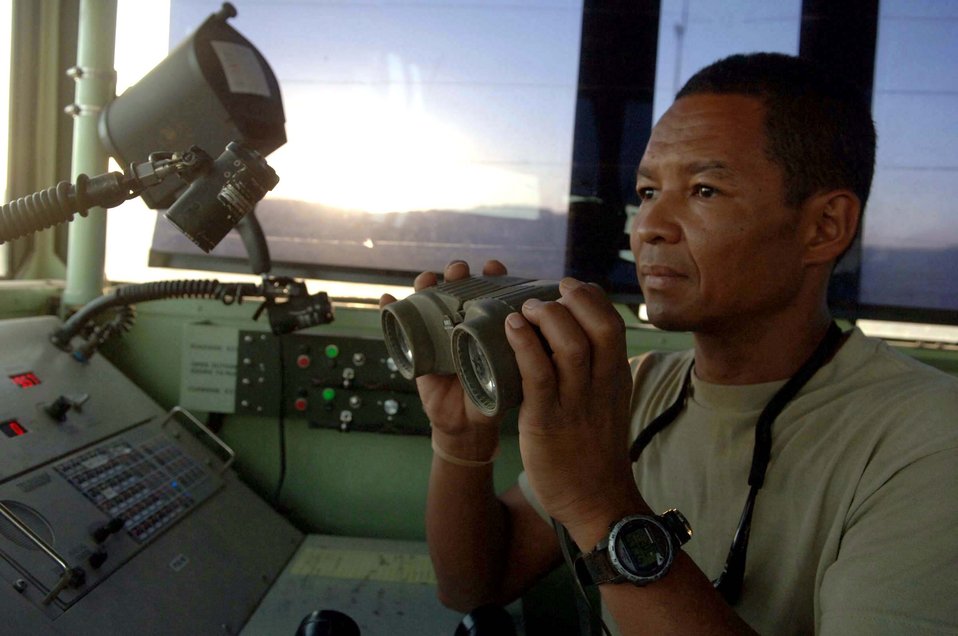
Controlling skies over dangerous territory

Tech. Sgt. Toshiya Jones monitors aircraft as they park on the narrow, dirt airstrip at Tarin Kowt, Afghanistan, on July 10. Sergeant Jones is an air traffic controller deployed from Tinker Air Force Base, Okla.